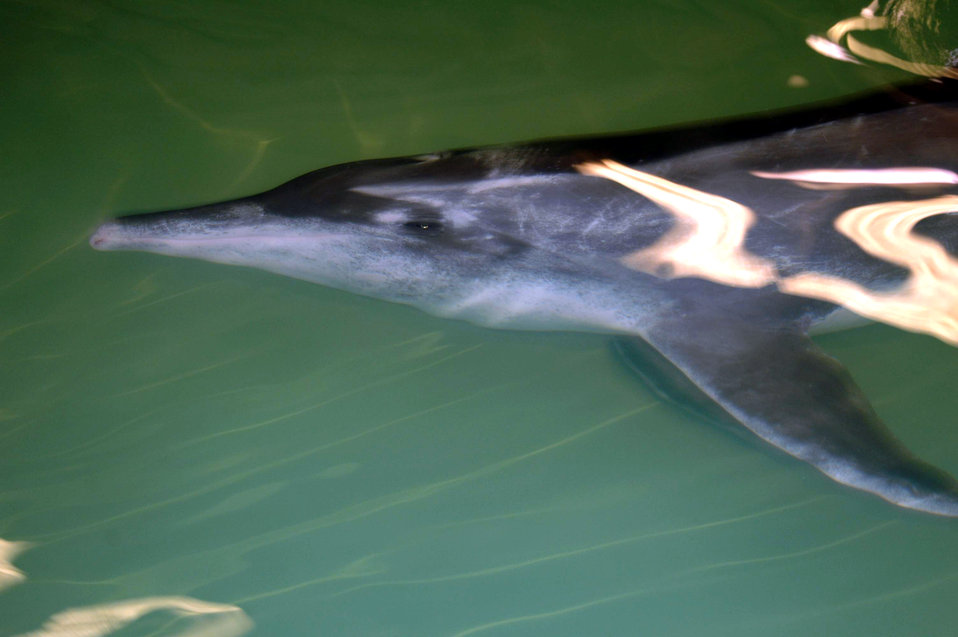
Reservists airlift dolphin to Florida

CORPUS CHRISTI, Texas -- Noah swims in his tank the day before his flight to Florida. A crew with Air Force Reserve Command's 815th Airlift Squadron at Keesler Air Force Base, Miss., flew Noah on a C-130J Hercules on July 15.